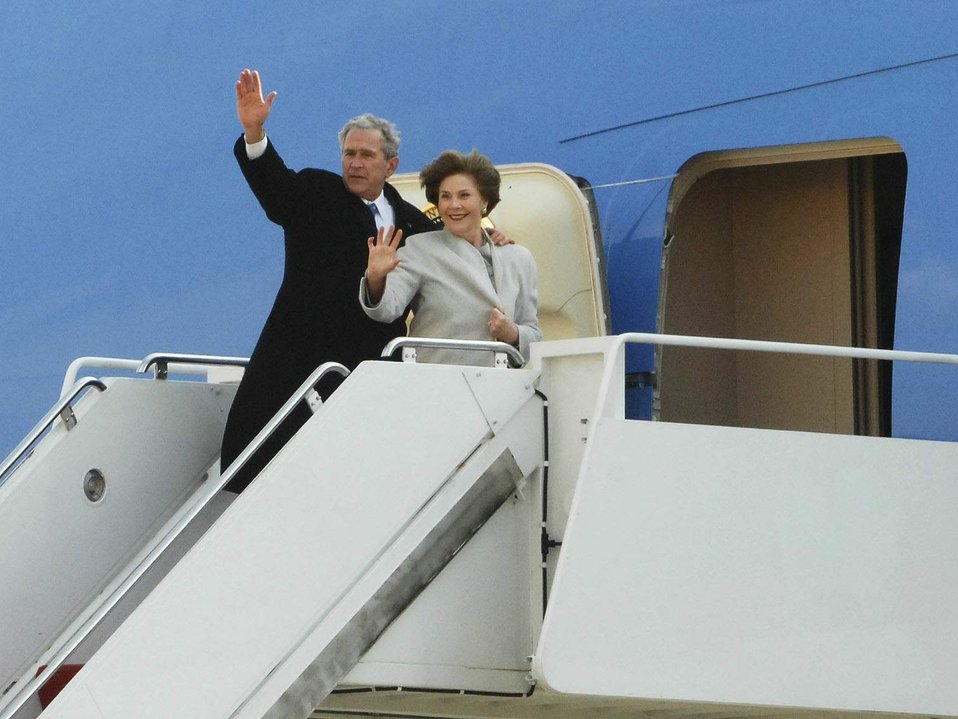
Troops bid former President Bush farewell at Andrews

Former President George W. Bush and former First Lady Laura Bush give a final wave to the crowd of more than 1,000 people gathered to wish them a fond farewell prior to their final departure aboard a VC-25 Jan. 20 at Andrews Air Force Base, Md. The president and Mrs. Bush are headed to Dallas where they will reside after eight years of living in the White House.